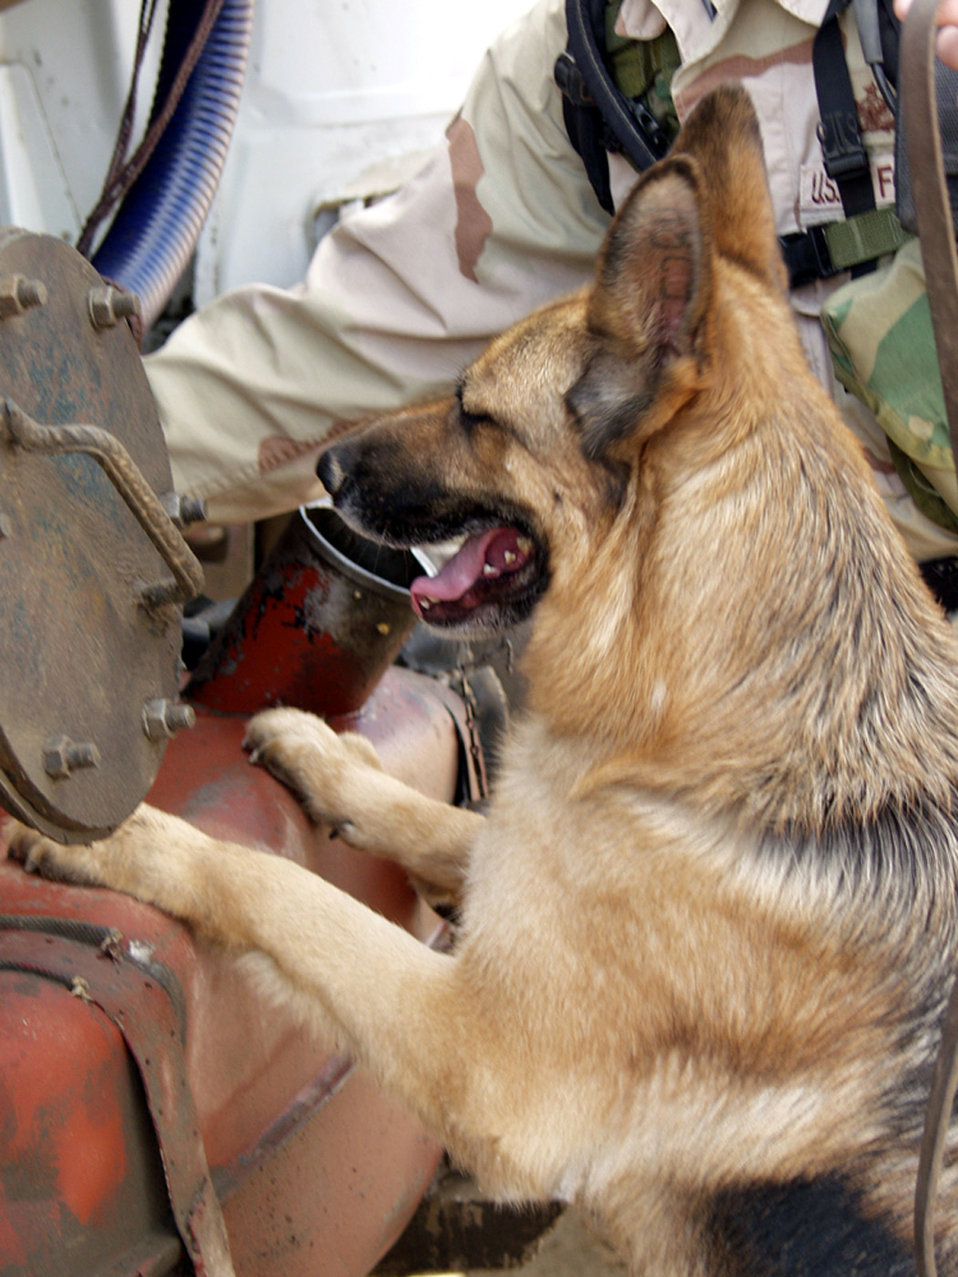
Working like a dog

KIRKUK AIR BASE, Iraq -- Exa checks a vehicle during a routine inspection. The military working dog and handler, Staff Sgt. Andrew Bedell, are assigned to the 506th Expeditionary Security Forces Squadron here. Both are deployed from McConnell Air Force Base, Kan.